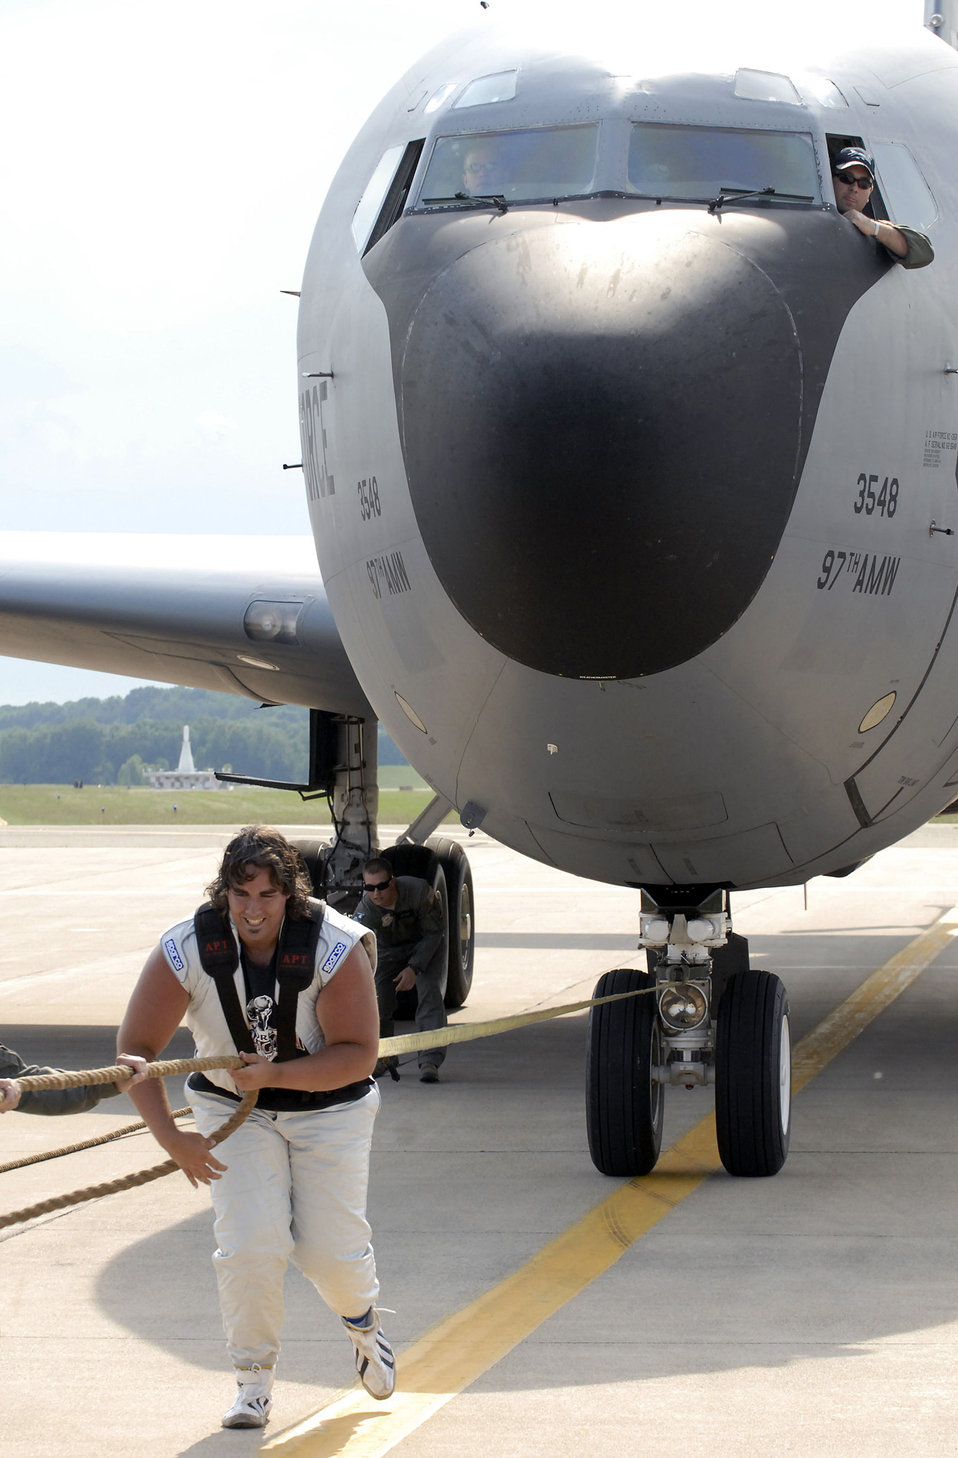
KC-135 and the Strongman

Strongman Mark Kirsch pulls a 140,000 pound KC-135 Stratotanker July 1, 2011, during the Battle Creek Field of Flight and Balloon Festival in Battle Creek, Mich. The KC-135 is assigned to the 54th Air Refueling Squadron at Altus Air Force Base, Okla., and was the first Air Force plane to ever be pulled by a strongman.